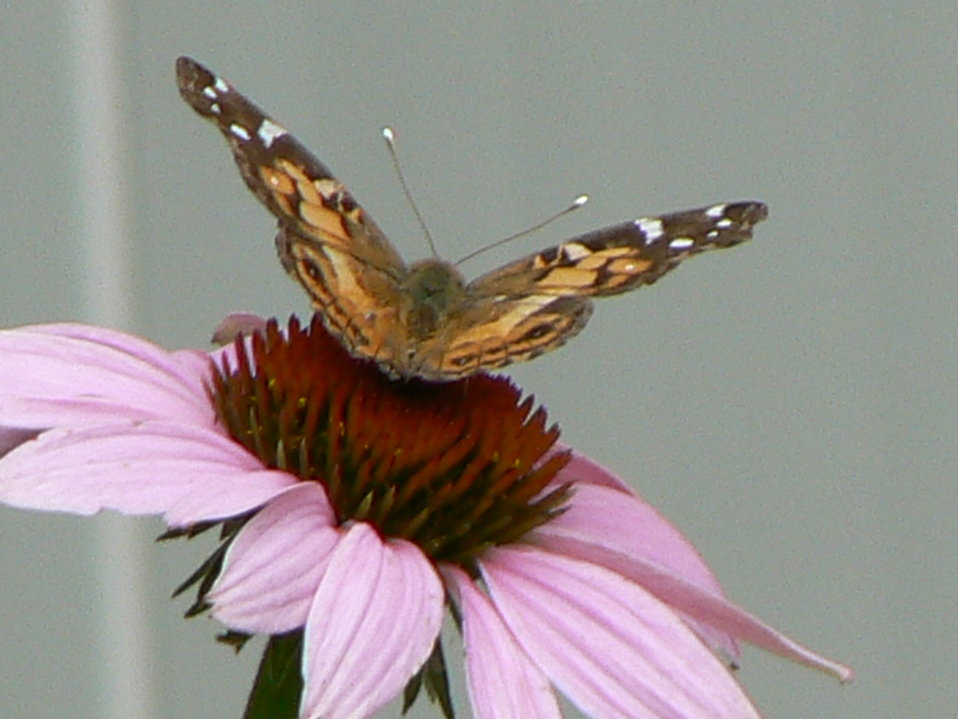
Purple Coneflower and American Painted Lady

An American painted lady on a purple coneflower at Cape May National Wildlife Refuge.